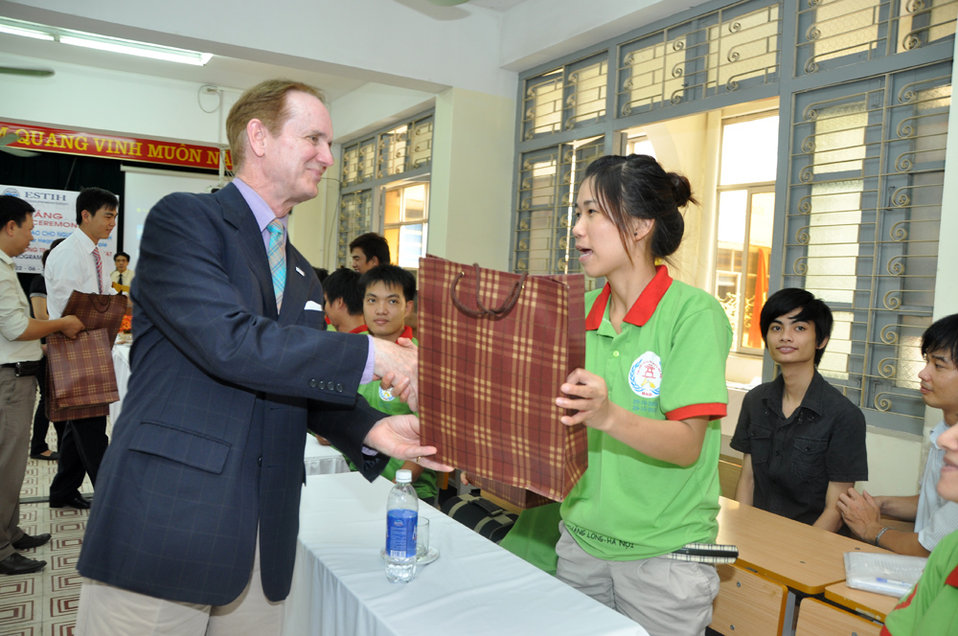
USAID Mission Director Francis Donovan participates in graduation of IT students in Hanoi on June 22, 2011.